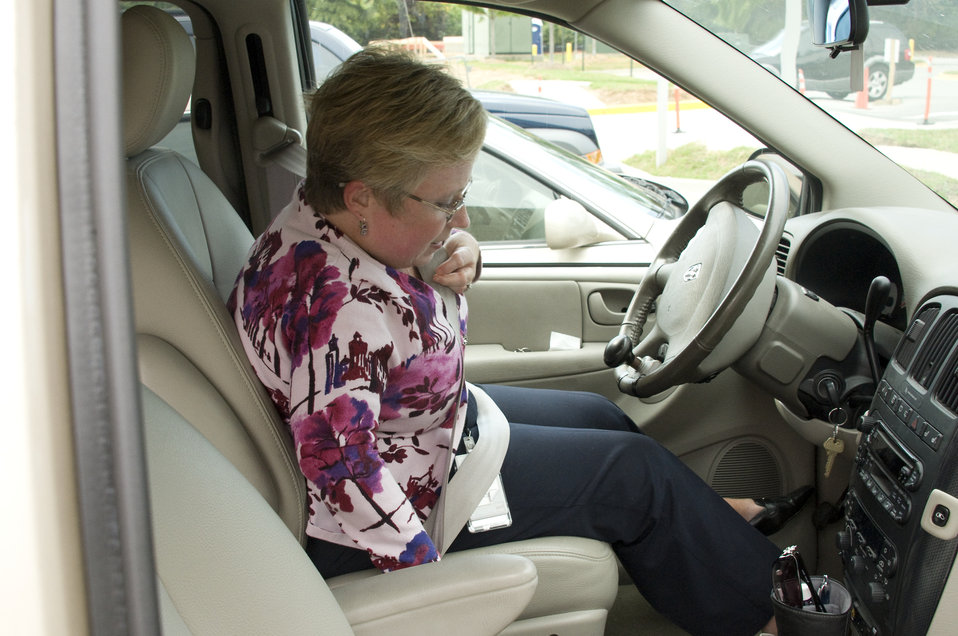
The woman pictured here, had just boarded her vehicle by way of an access ramp, while seated in her wheelchair, and had maneuvered herself into the driver's-side swivel seat. At this point before embarking on her drive, she was fastening her safety belt. Note the additional steering wheel handle, which due to her disability, would enable her to operate the accelerator and braking system using this hand control.